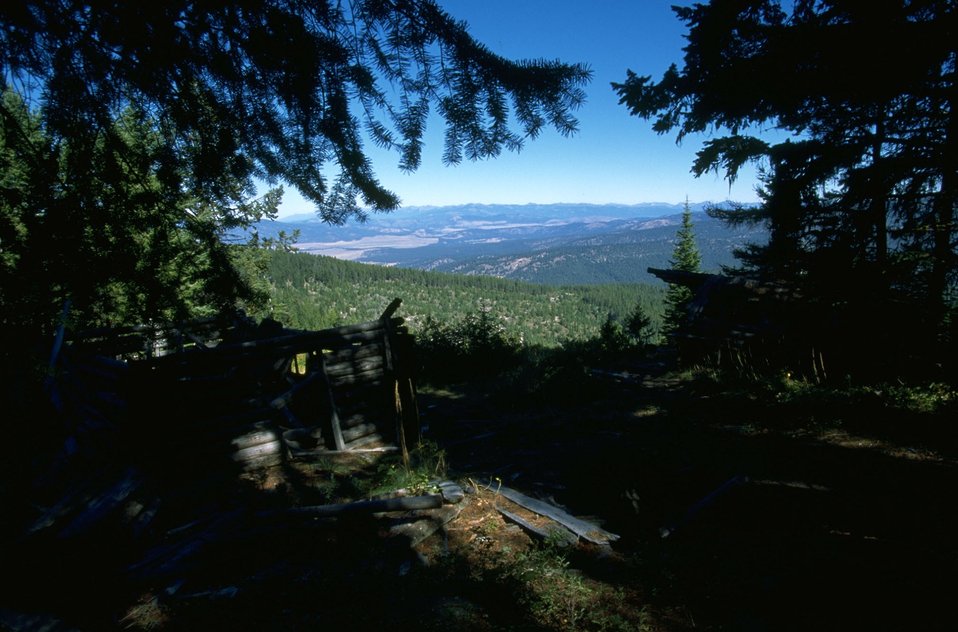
Coloma Ghost Town-collapsed cabin with Balckfoot Valley in background